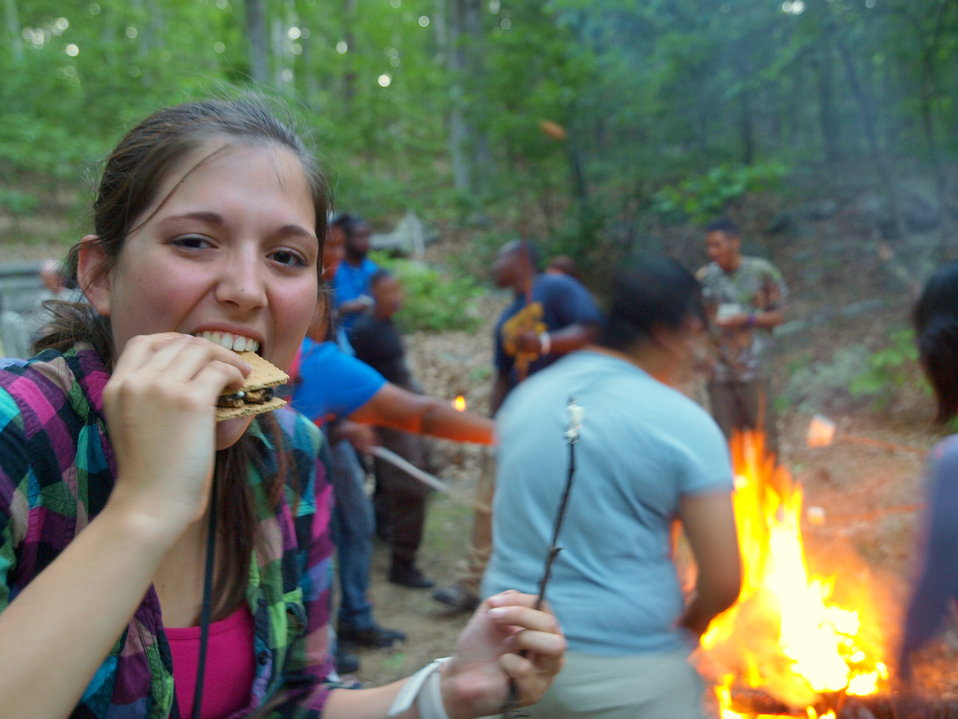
Campfire!

S'mores with Venessa.